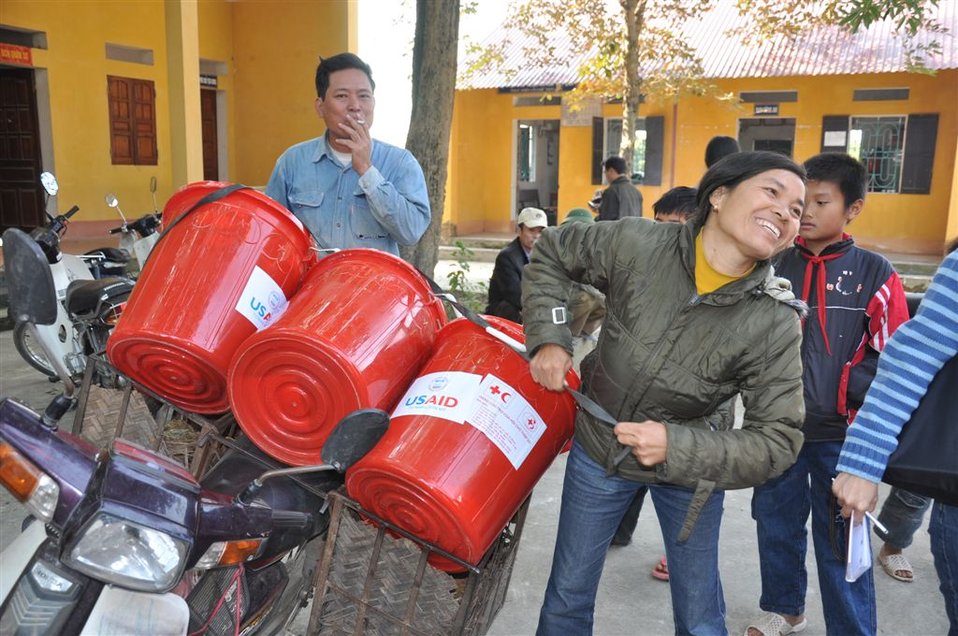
USAID provides household kits to families affected by flooding near Hanoi